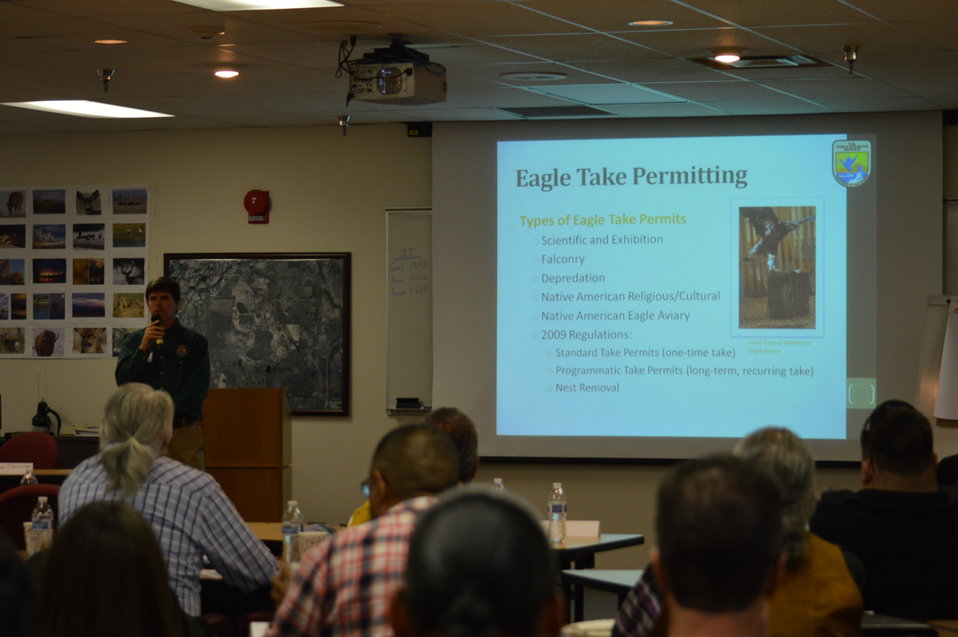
Eagle Summit III

Clint Riley starts his presentation at the Eagle Summit III in Denver, Colorado on March 20, 2014 at the Rocky Mountain Arsenal National Wildlife Refuge.